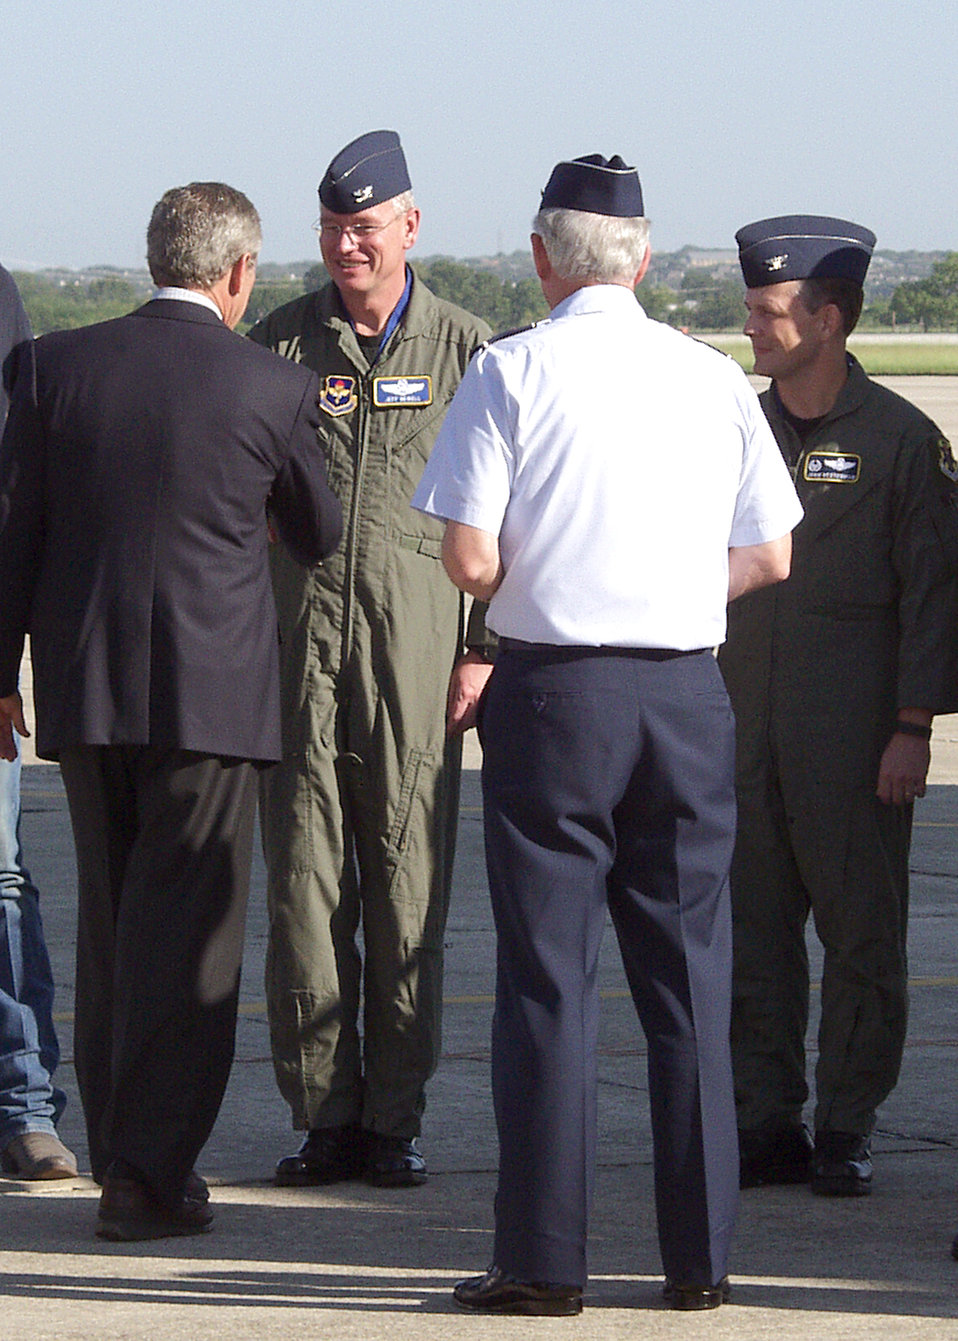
President monitors Hurricane Rita operations at Randolph

RANDOLPH AIR FORCE BASE, Texas -- President George W. Bush shakes the hand of Col. John Newell prior to his Sept. 25 departure here where he received a briefing about the military's response in the aftermath of Hurricane Rita. Colonel Newell is commander of the 12th Operations Group here.